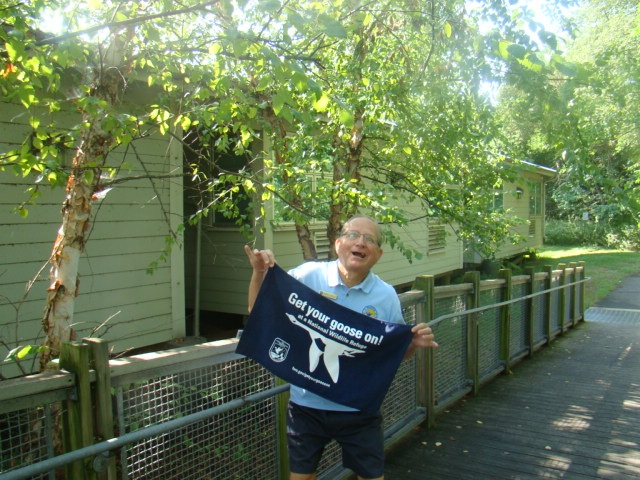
Get Your Goose On!

Volunteer Dante Cusano Gets His Goose On at the Heinz Visitor Center.